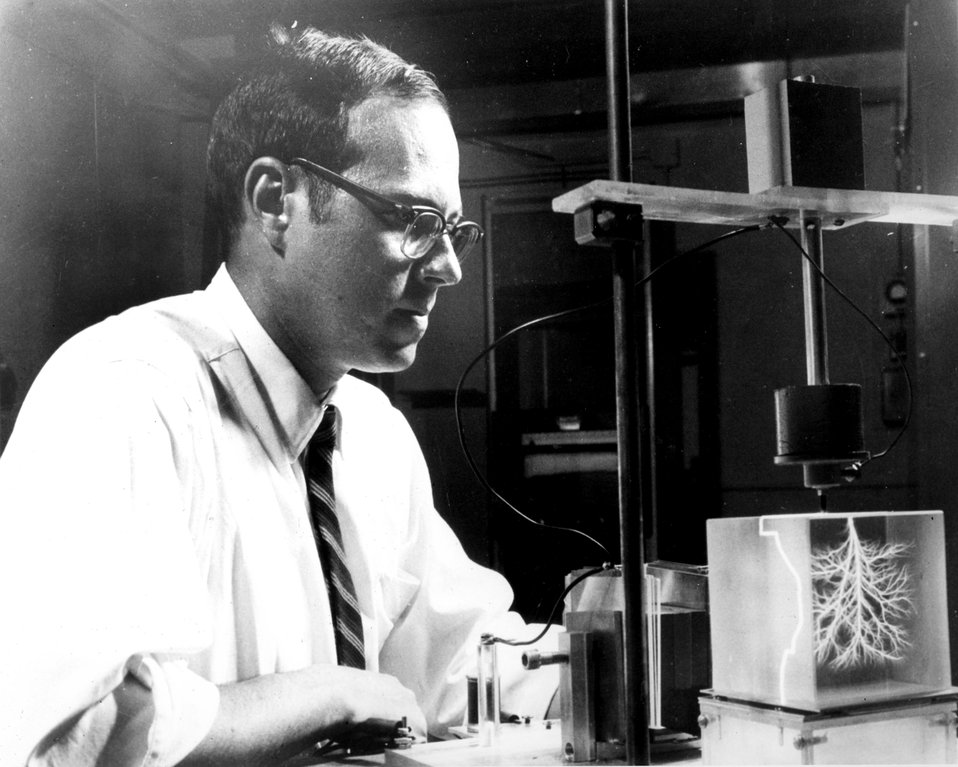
Electrical discharge obtained up on impact of an irradicated glass box.
c.1965